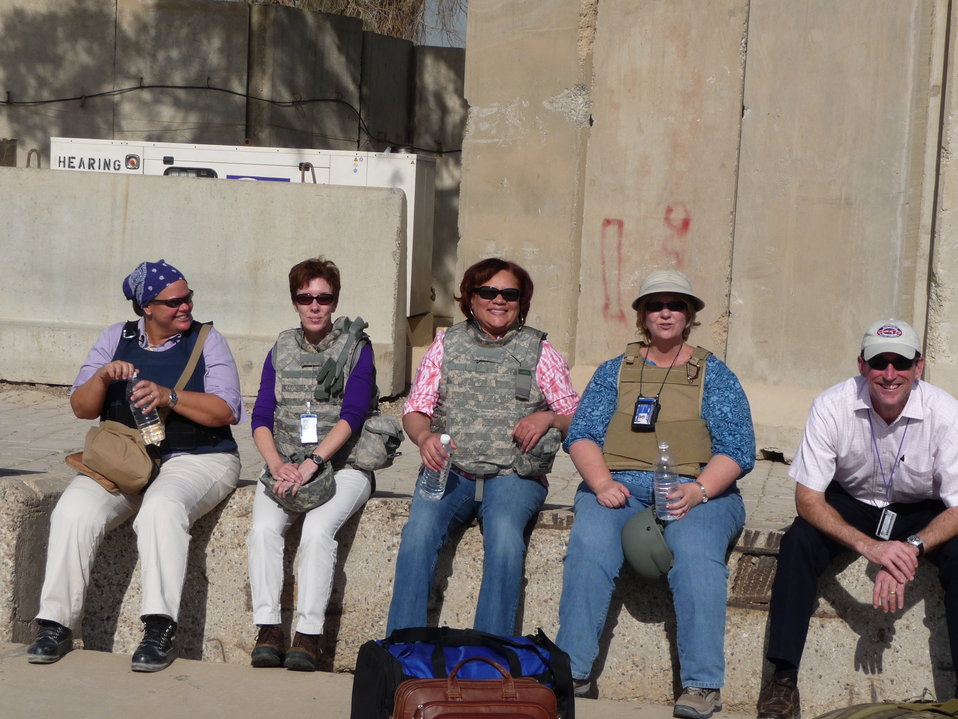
Personnel Wait for Helicopter

Tami Halmrast-Sanchez (USAID), Lisa Piascik (PRT Diyala Team Leader), June Ricard (U.S. Embassy Baghdad), Marialice Eperiam (U.S. Embassy Baghdad), and David Kennedy (U.S. Embassy Baghdad) wait for a helicopter transport in Baghdad, Iraq, September 2009.